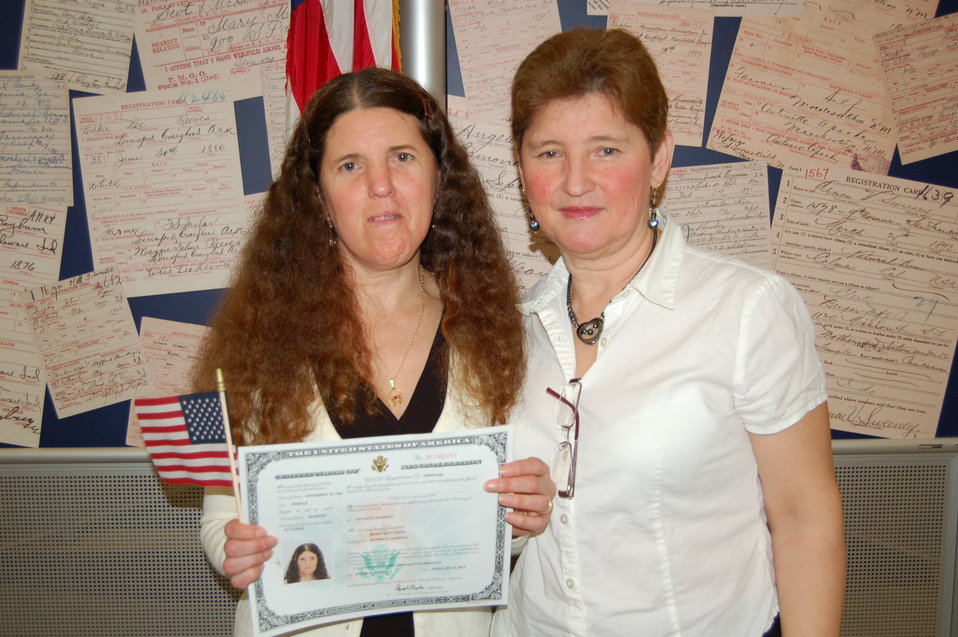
New Citizens